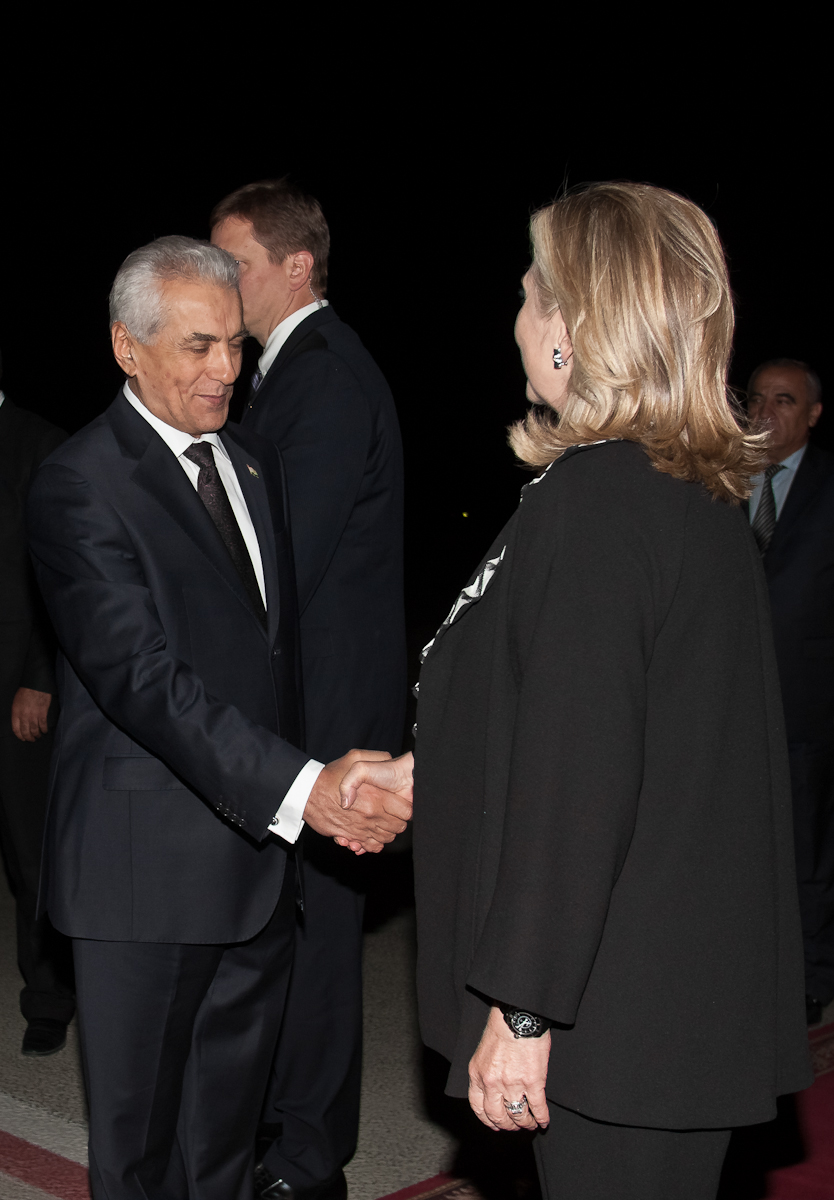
Secretary Clinton Is Greeted By Tajik Foreign Minister Zarifi

U.S. Secretary of State Hillary Rodham Clinton is greeted by Tajik Foreign Minister Hamrokhon Zarifi upon her arrival to Dushanbe, Tajikistan, on October 21, 2011.